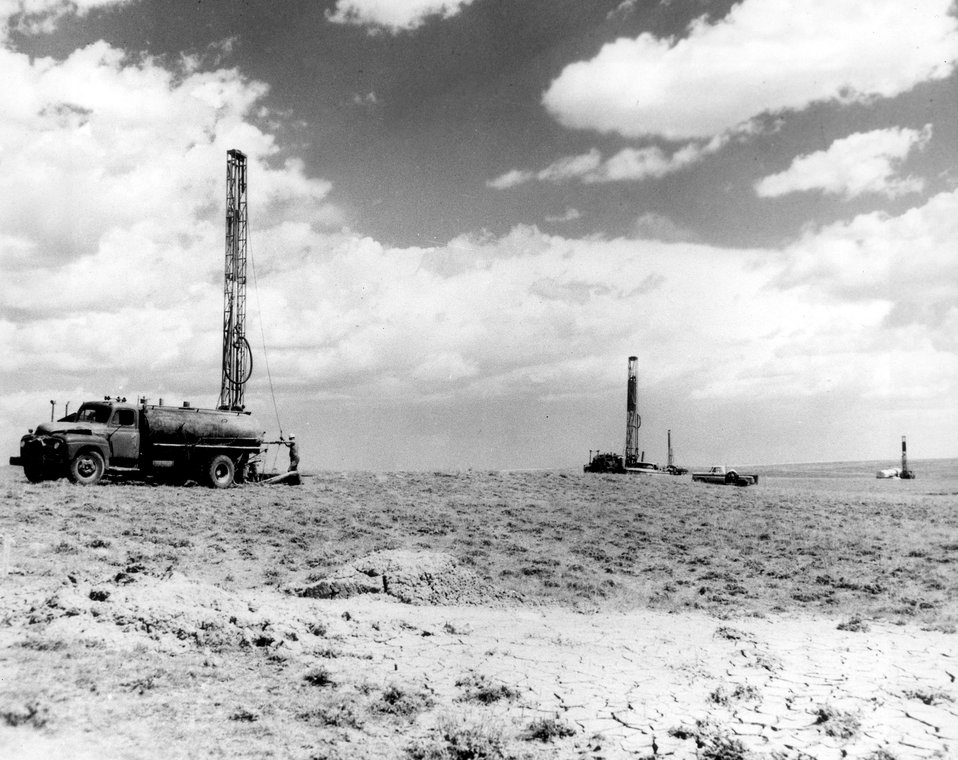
Exploration activities for new sources of uranium ore were the greatest they've ever been during 1967 -- even surpassing the previous peak year of 1957. Photo shows three rotary drilling rigs, exploring for the developing uranium reserves in the Shirley Basin of Wyoming. c. 1968